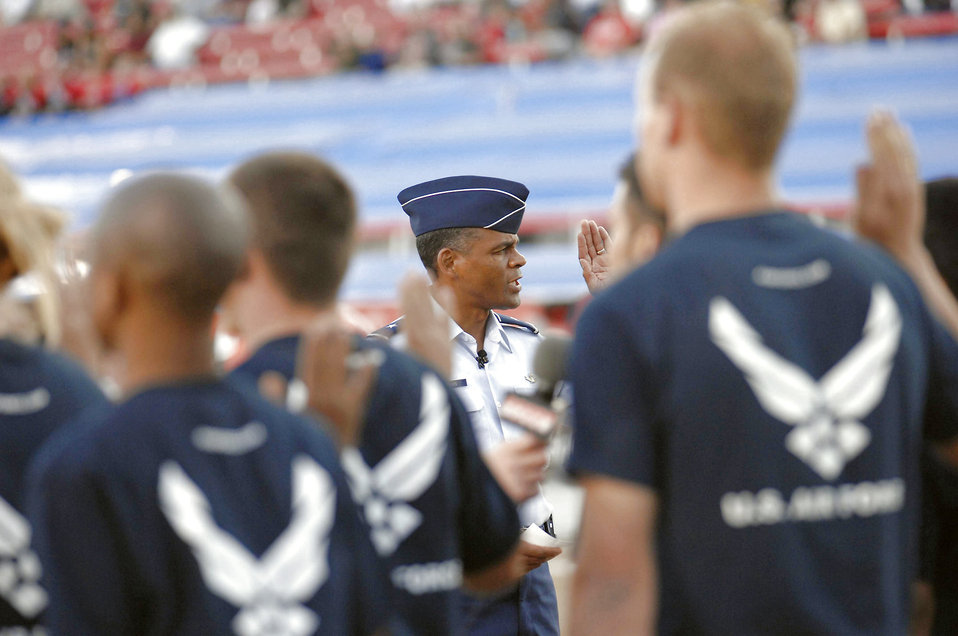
Air Force monster truck wows Las Vegas crowd

Brig. Gen. Everett H. Thomas administers the oath of enlistment to 20 future Airmen currently in the delayed enlisted program before the start of the Monster Jam World Finals March 29 at Sam Boyd Stadium in Las Vegas. General Thomas is the Air Force Warfare Center vice commander at Nellis Air Force Base, Nev.